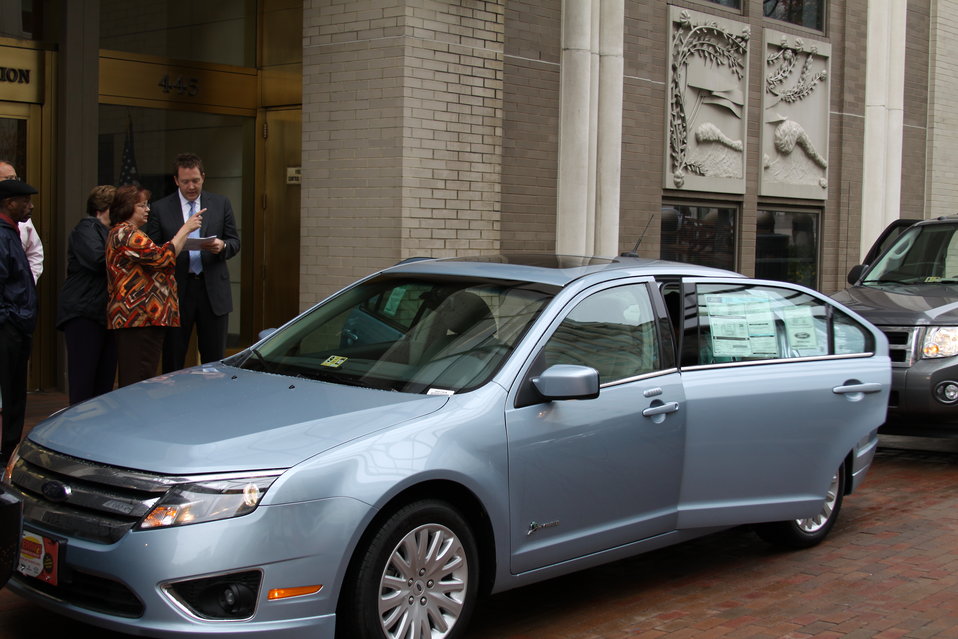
FCC Official Vehicle Tour